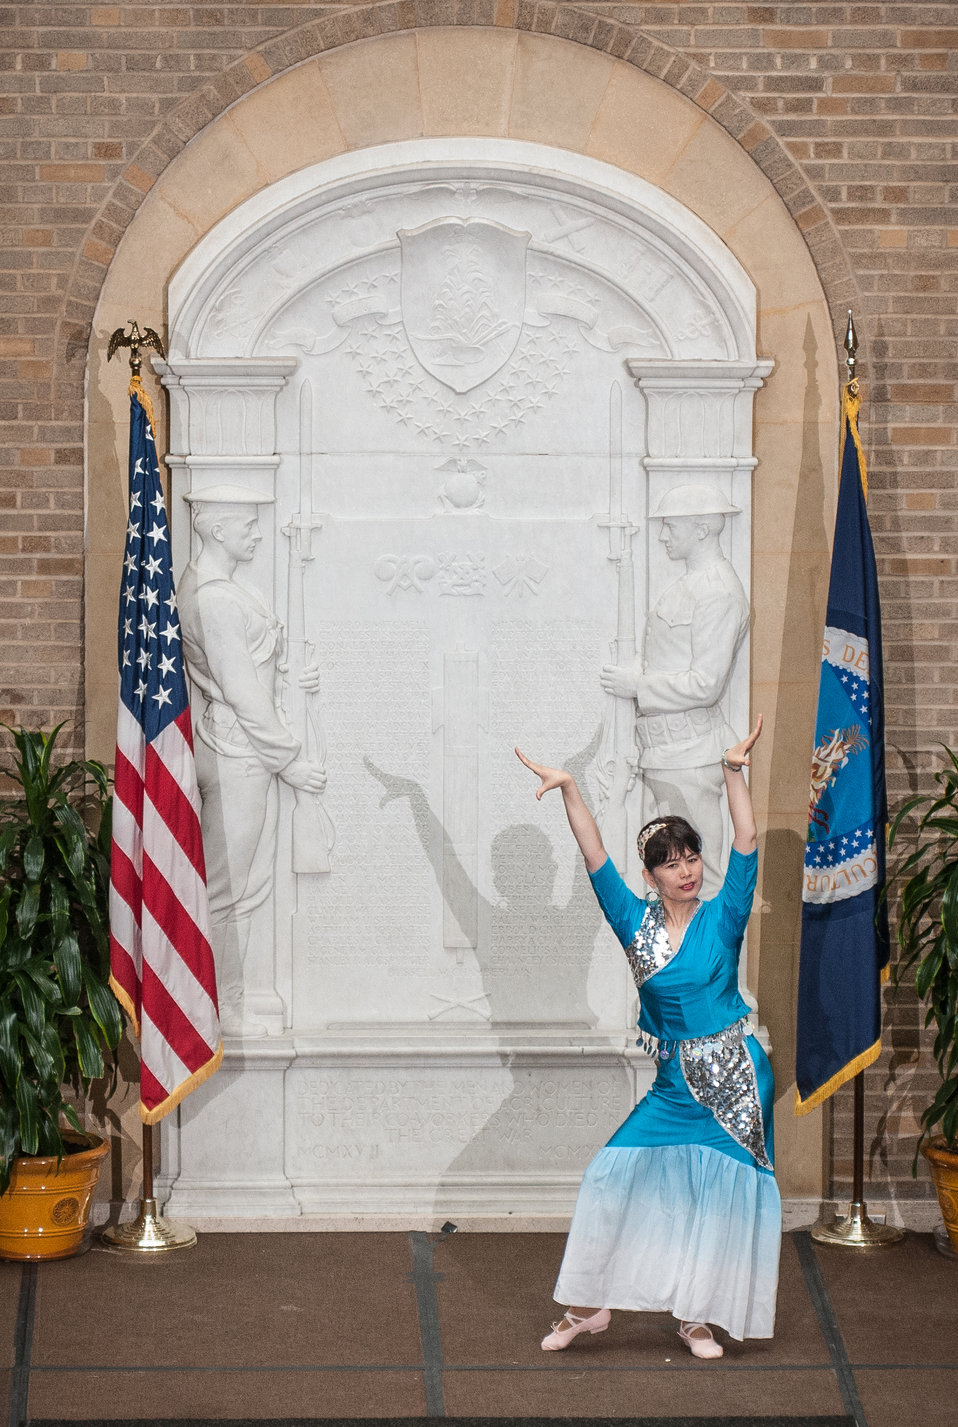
Hong Yang performs the Chinese Dai dance, “Moonlight Fengwei Zhu,” during the U.S. Department of Agriculture’s (USDA) Asian Pacific American Heritage Month Observance, at the USDA headquarters, Whitten Building patio, in Washington, D.C., on Thursday, May 23, 2013. This year’s theme is “Building leadership; Embracing the Cultural Values and Inclusions.”